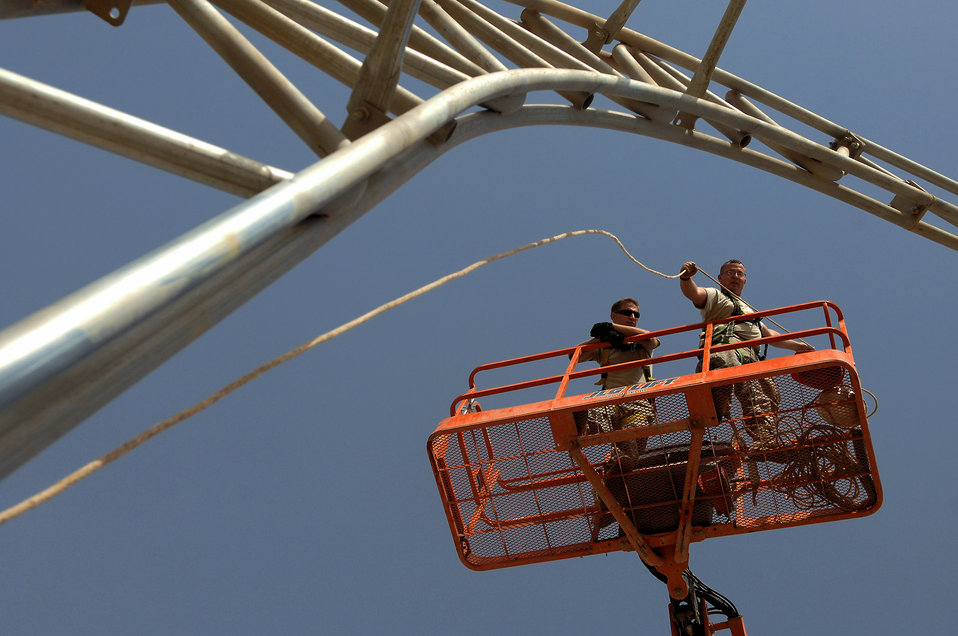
Under the big top

Staff Sgt. Karl Ferree raises a lead rope over the skeleton of a big top shelter May 7 at Balad Air Base, Iraq. The shelter was moved from its previous location to deconflict with flightline operations. Sergeant Ferree is a 332nd Expeditionary Civil Engineer Squadron structural engineer deployed from Luke Air Force Base, Ariz.